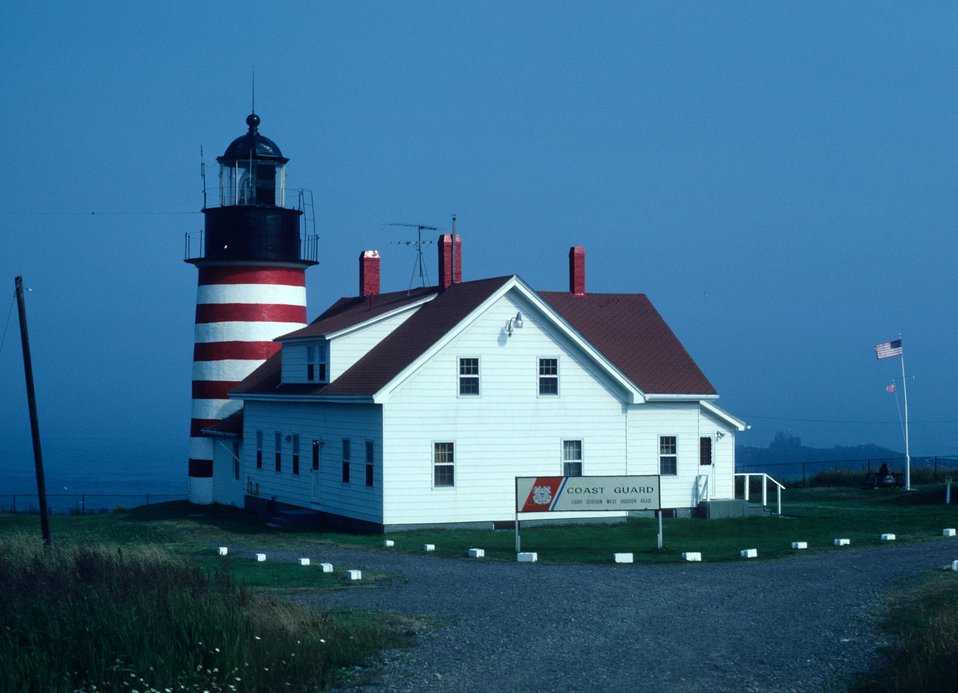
West Quoddy Head Lighthouse. Ironically, West Quoddy Head is the easternmost point in the contiguous United States.